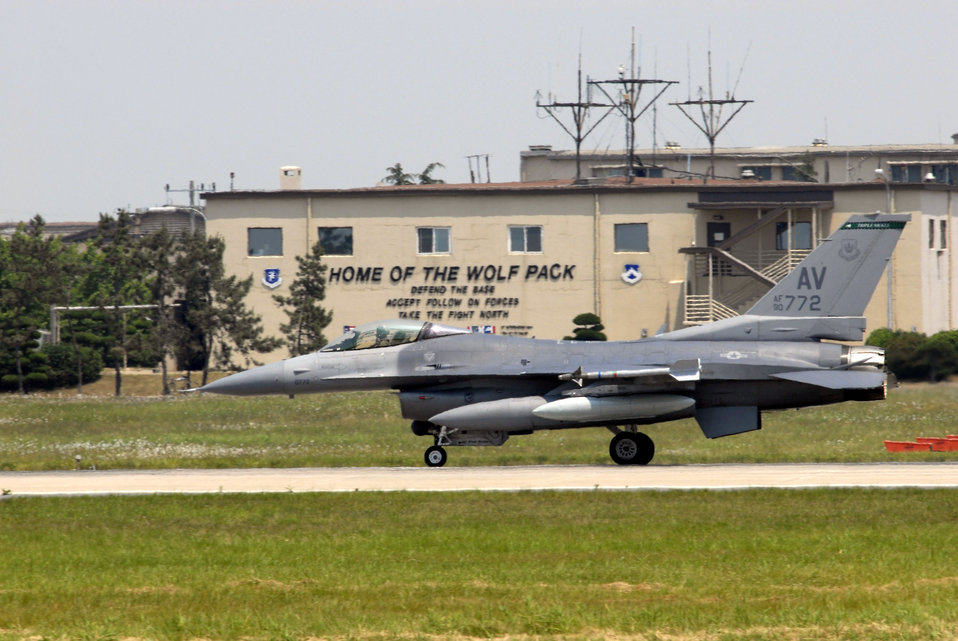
USAFE fighter squadron deploys to Kunsan

An F-16 Fighting Falcon from the 555th Fighter Squadron from Aviano Air Base, Italy, arrives at Kunsan Air Base, South Korea. Aviano AB Airmen are at Kunsan AB for a 120-day deployment. This is the first time a U.S. Air Forces in Europe fighter unit has deployed to a Pacific Air Force base.